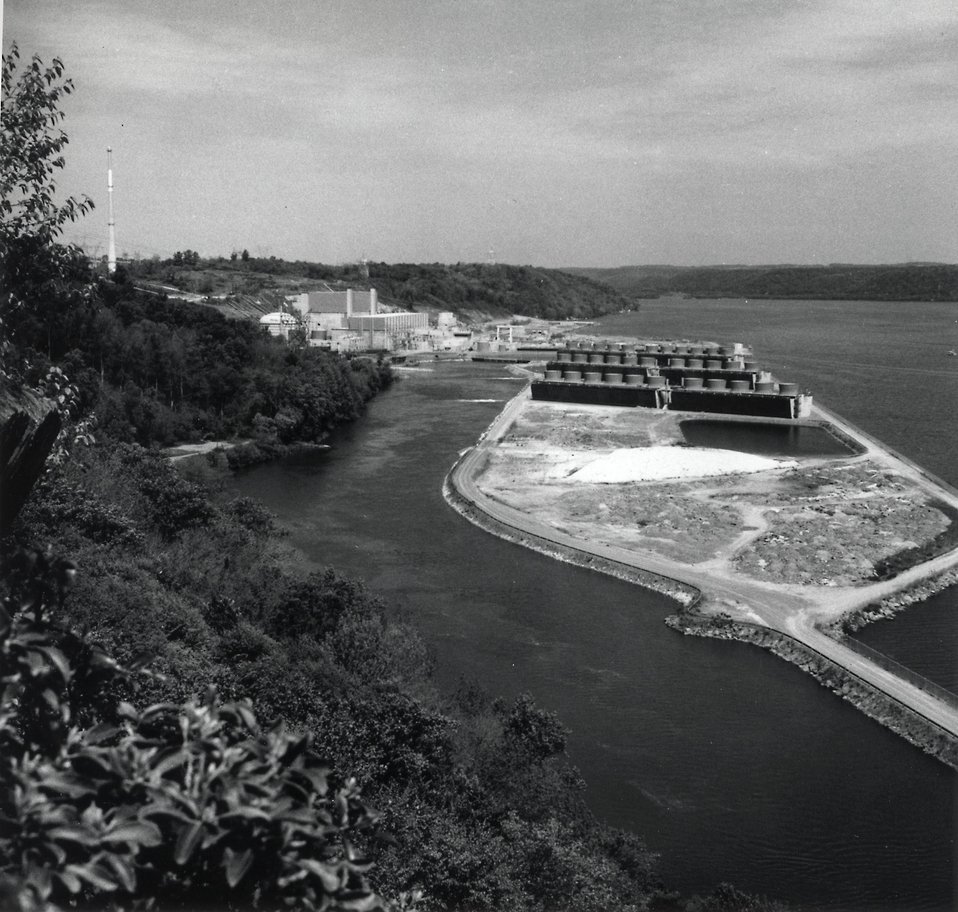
Looking up the Susquehanna River at Peach Bottom (Pa.) Atomic Power Station. Circa 1974.